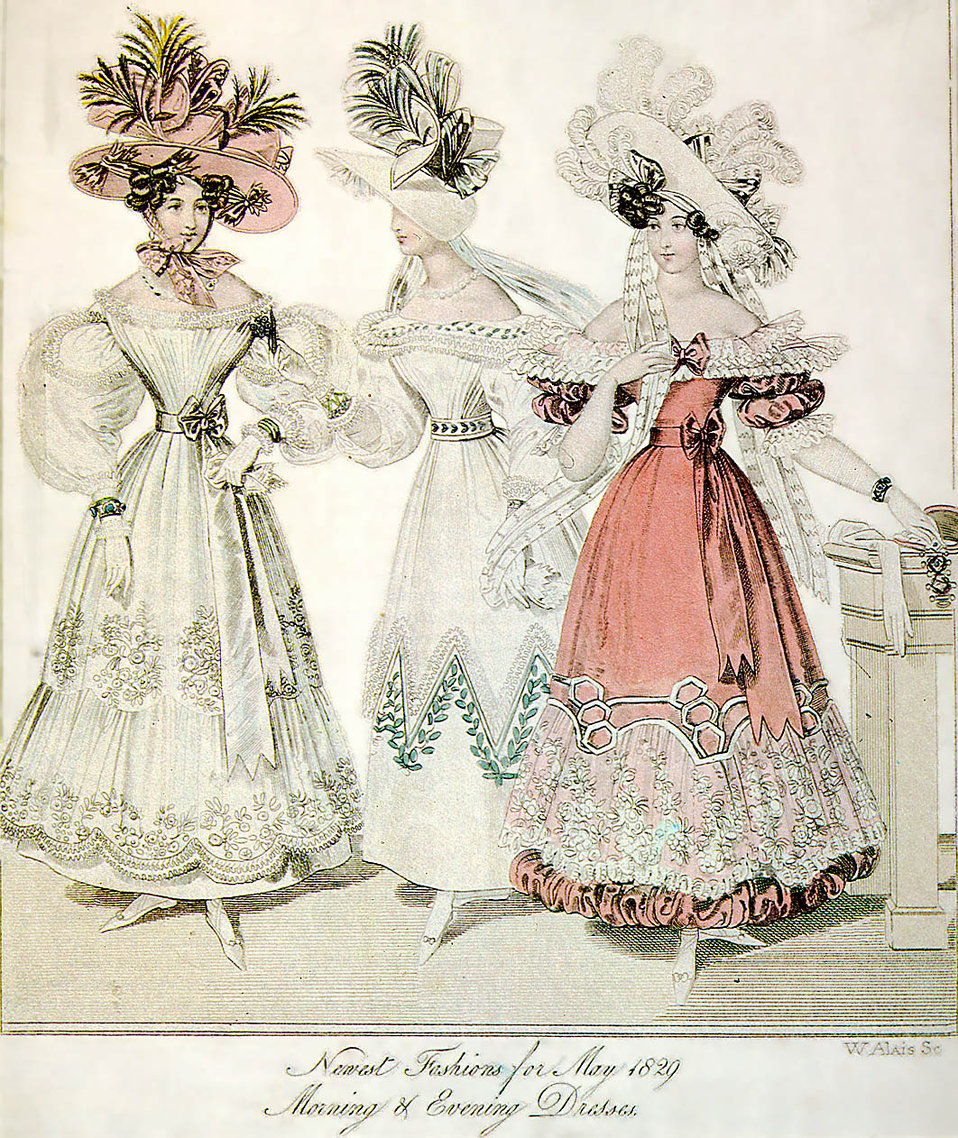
1829-Morning-Evening-Dresses-World-of-Fashion-May